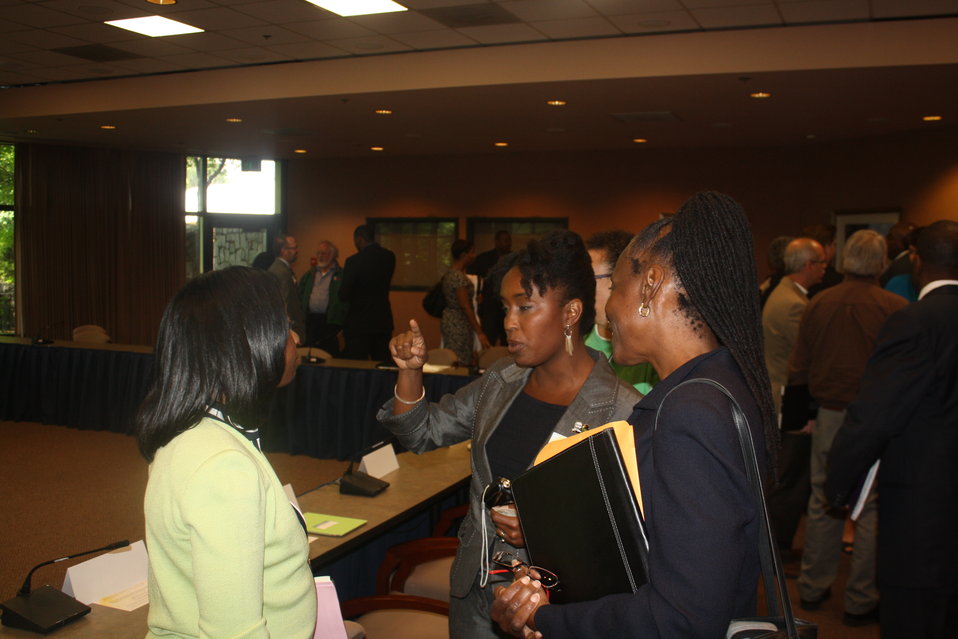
Faith-Based and Neighborhood Partnership launch at Atlanta's Carter Center